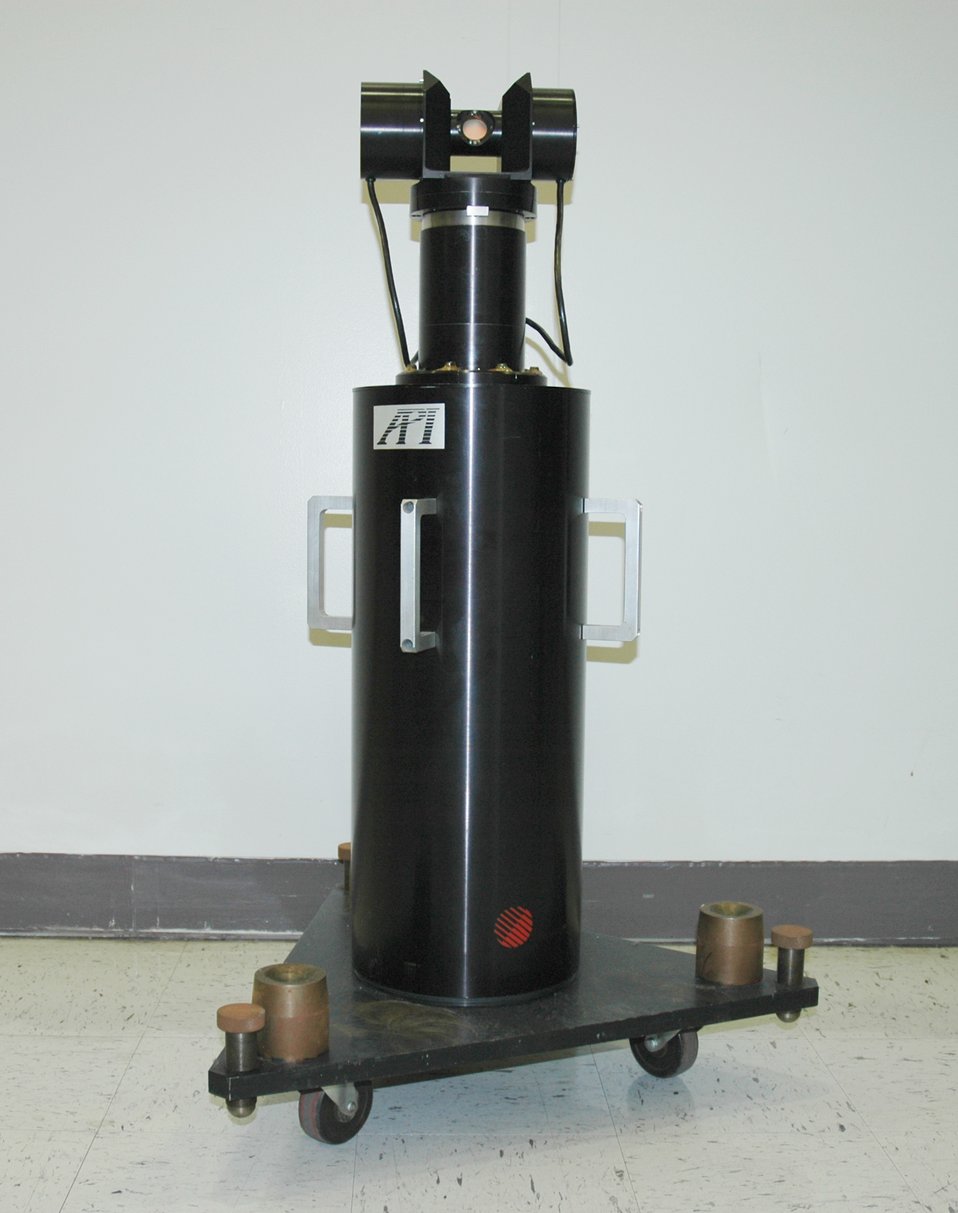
Laser tracking interferometer.